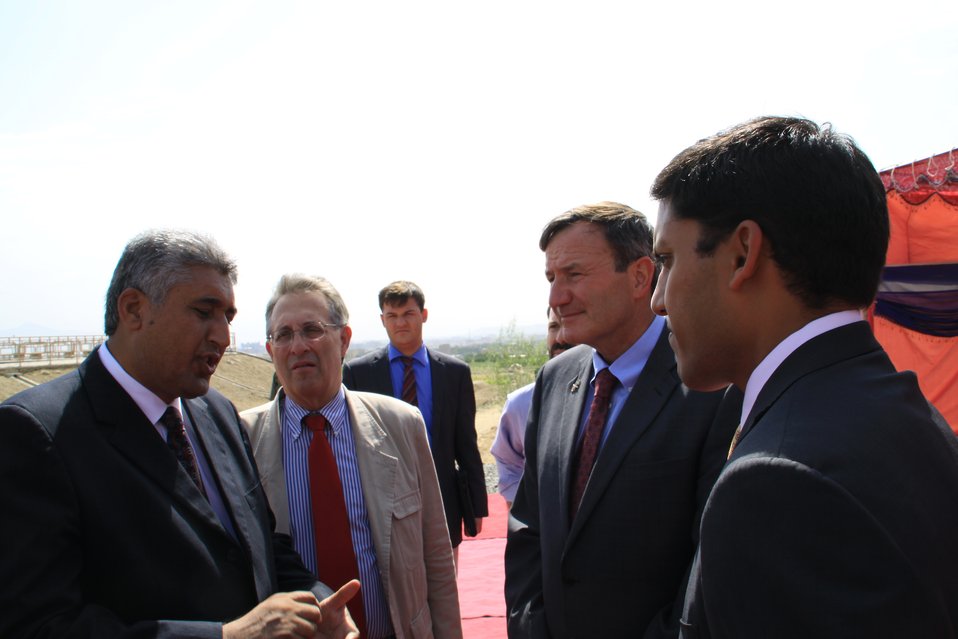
Badam Bagh Farm